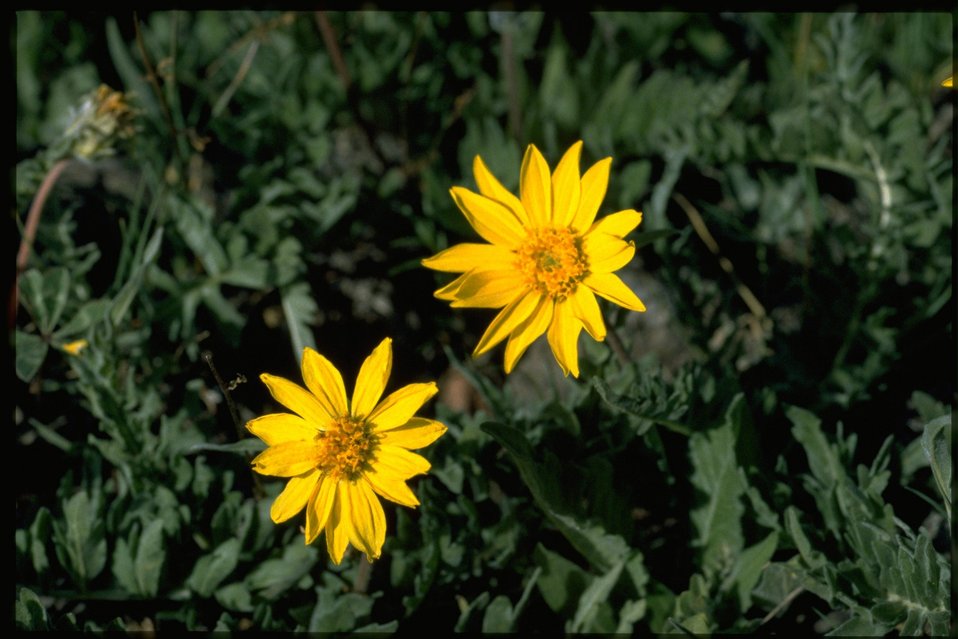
Closeup shot of Hooker's Balsamroot wildflower (Balsamorhiza Hookeri).